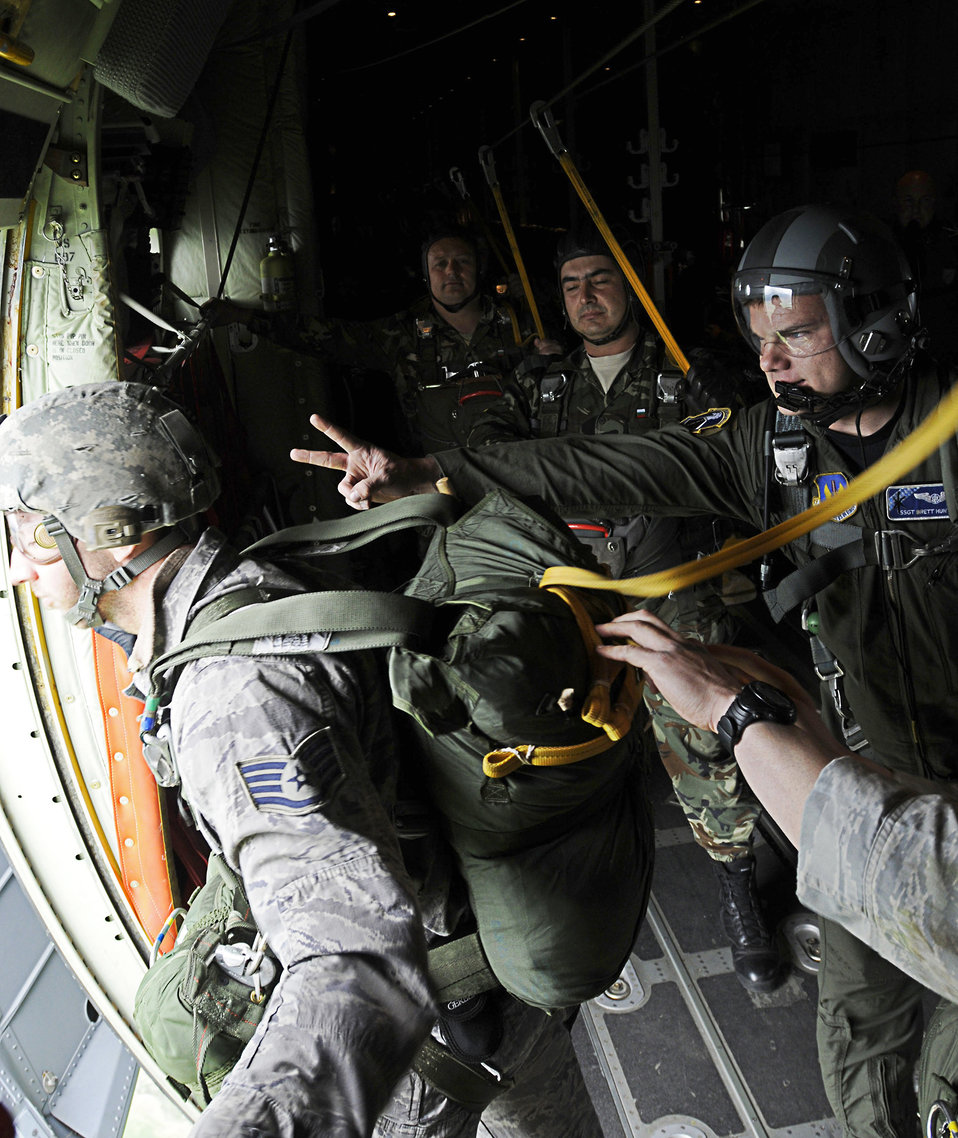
Thracian Spring 2011

Staff Sgt. Brett Hunter gives